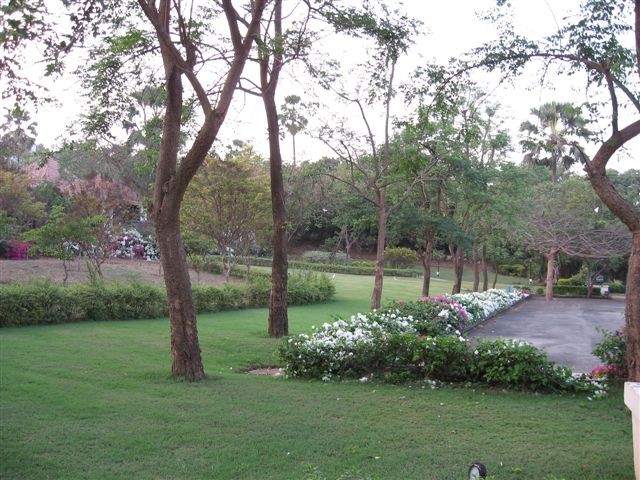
Uploaded by request of Jyotsna Kapadia.

Taken at 'Keshav Shrushti', Bhayander, in Thane District near Mumbai, India.

There are several advantages of composting waste and using compost for agricultural or gardening purpose. We can avoid problems related to decaying garbage, improve moisture retaining capacity and productivity of soil. Thus we can not only protect the environment, but also create an atmosphere worth living.